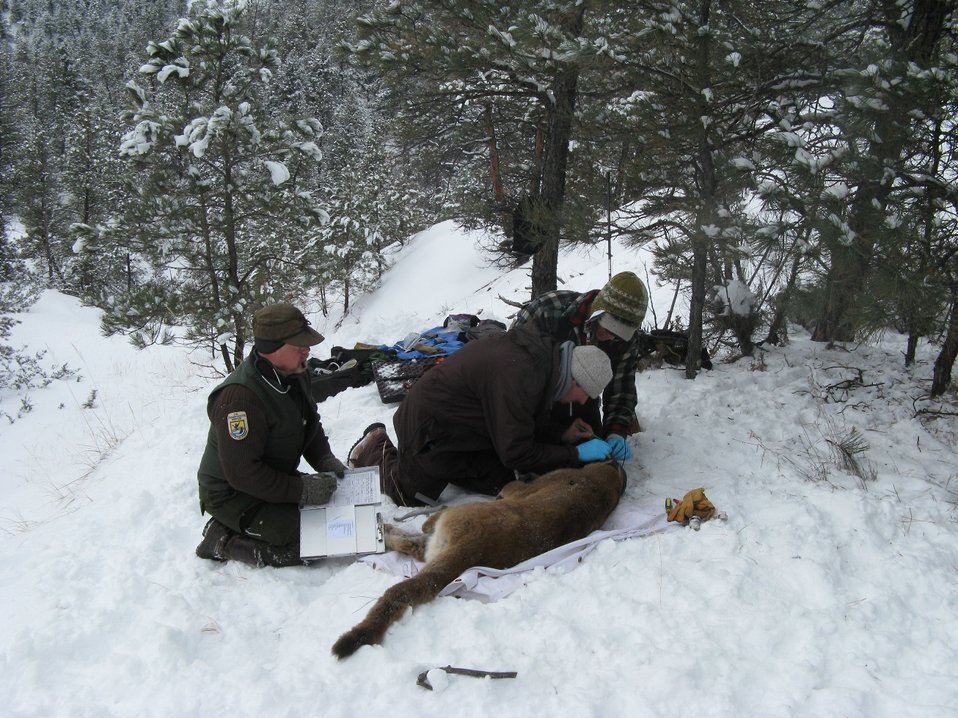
Mountain Lion Study

USFWS researchers chemically immobilize the mountain lion and gently lower it out of the tree with ropes. They take measurements, give it an ear tag and fit the collar.